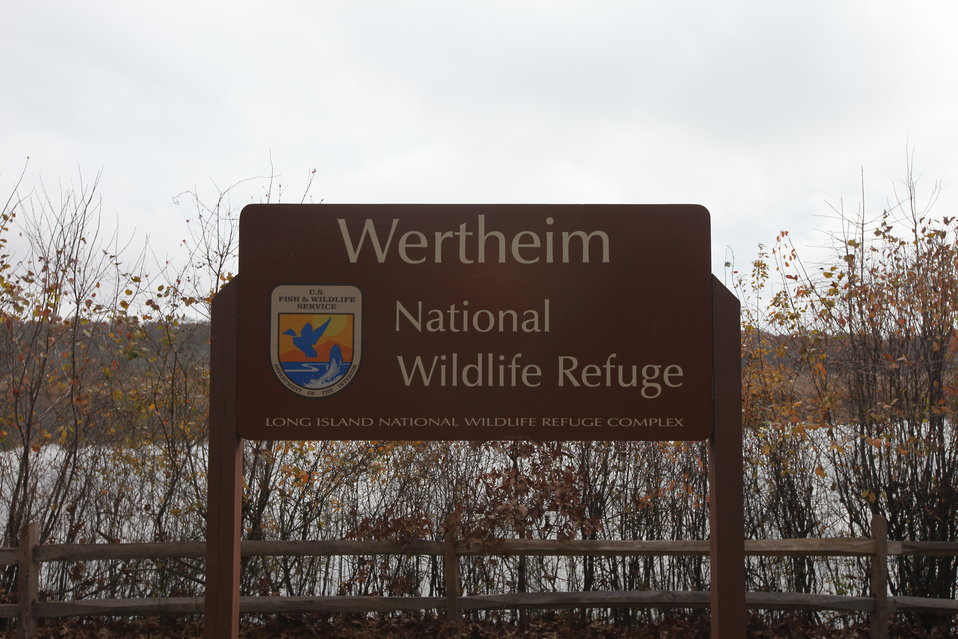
Refuge sign

The Visitor Center is located at the Wertheim NWR in Shirley, New York.